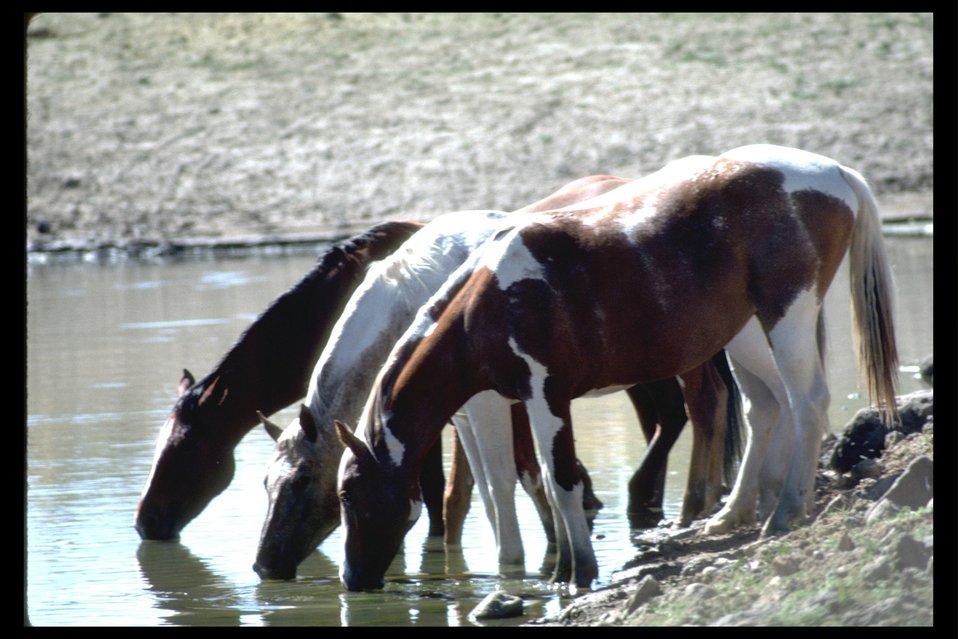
Pintos at water in South Steens HMA.